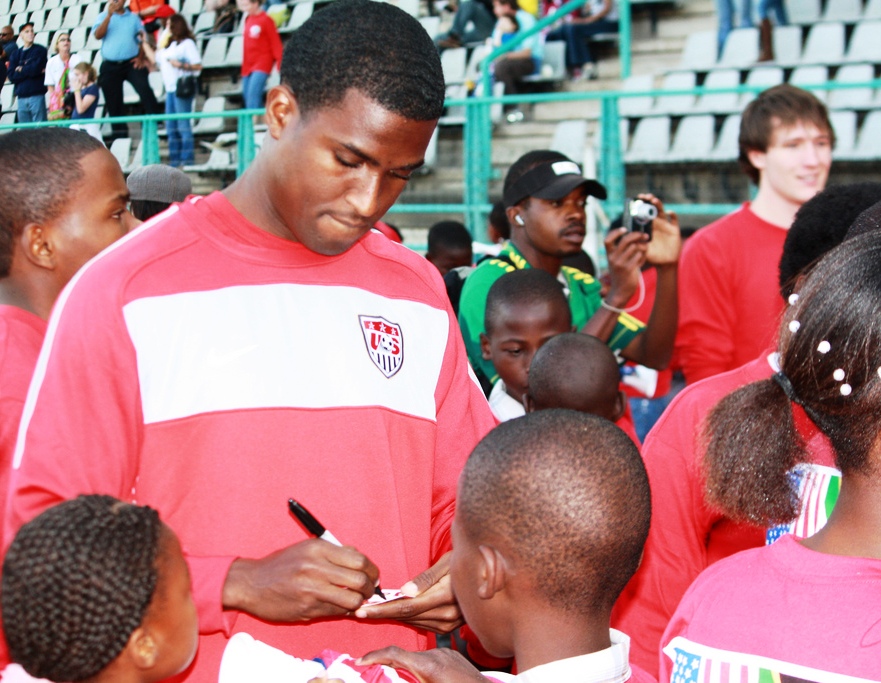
U.S. National Soccer Team Members Signs His Autograph

A member of the U.S. National Soccer Team signs an autograph for a South African student at the U.S. National Soccer Team's open practice session at the Pliditch Stadium in Pretoria, South Africa, on June 6, 2010. The U.S. National Soccer Team is preparing for the 2010 World Cup in South Africa.